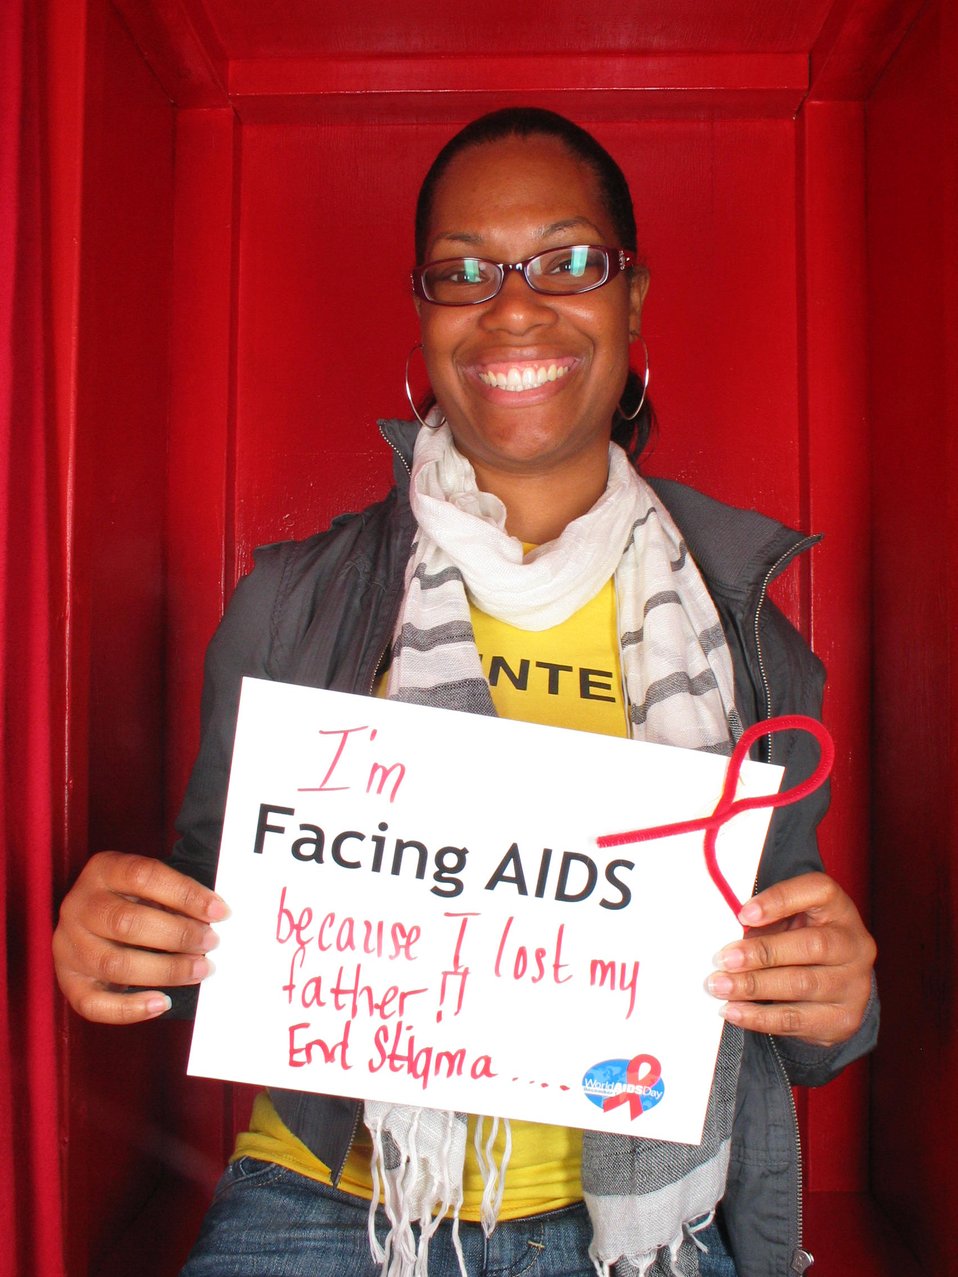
I'm Facing AIDS because I lost my father!! End stigma...